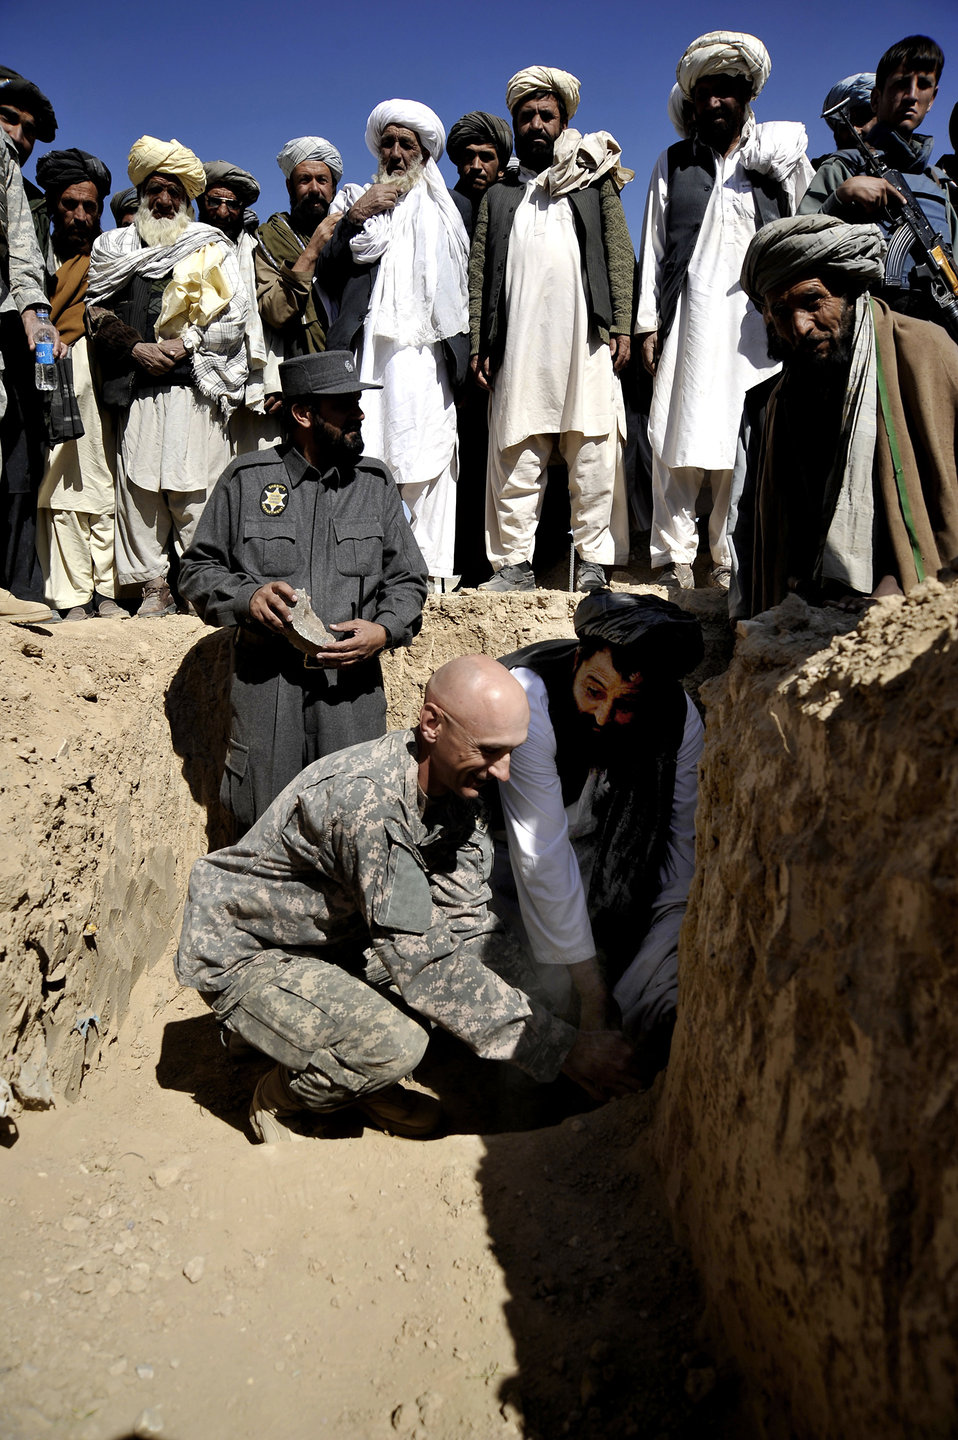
American servicemembers breaks ground on girl's high school in Afghanistan

Lt. Col. Andy Veres places one of the first rocks at a ground-breaking ceremony with Zabul's Provincial Governor Muhammad Ashraf Naseri Oct. 22, 2009, at Shajoy, Afghanistan. The placing of the rock symbolizes the beginning of constructions for the first high school in the province dedicated to educating females. Colonel Veres is the commander of the Zabul Provincial Reconstruction Team.